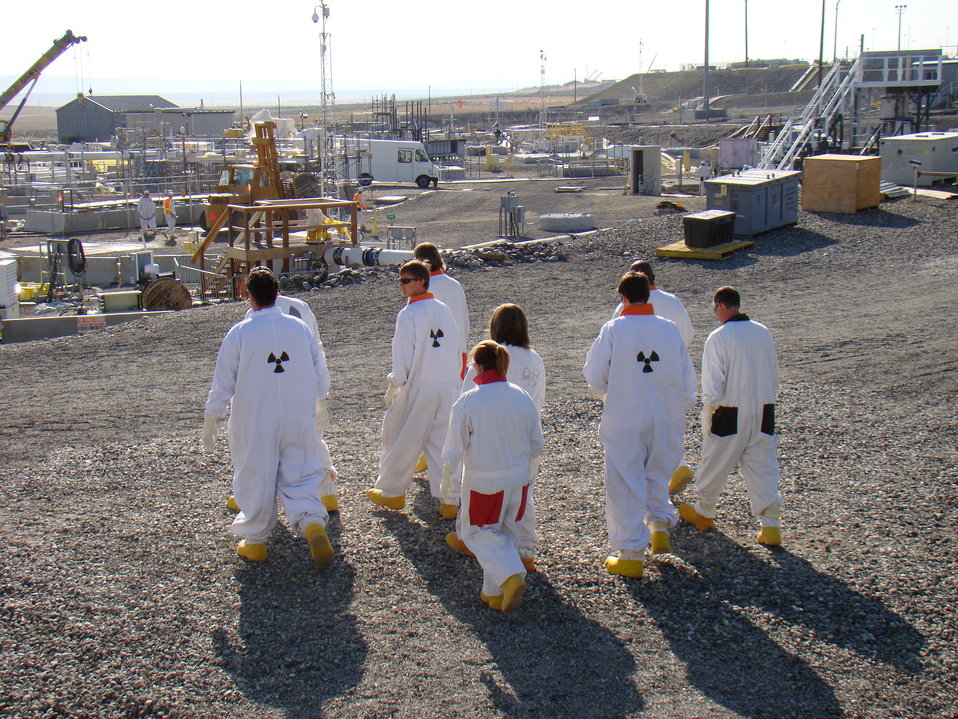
ORP Recovery Act jobs

New hires train to become certified Health Physics Technicians, who help keep coworkers safe from radiological contamination. Recovery Act funding at Hanford's tank farms helped create nearly 600 jobs at the peak of employment last fall.